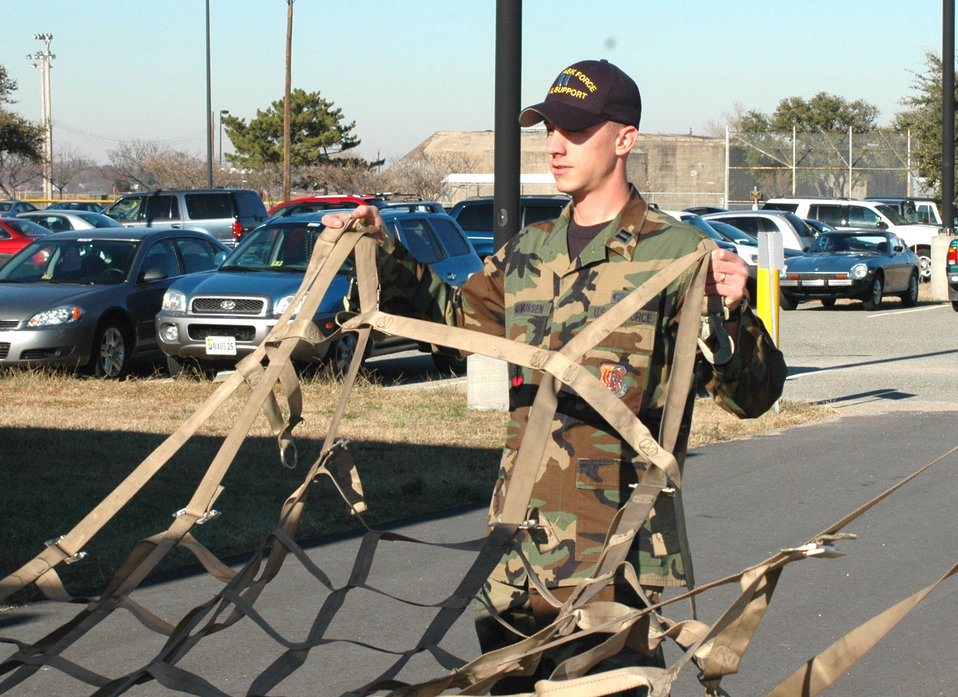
Serving through the season: Capt. Ryan Rasmussen

Capt. Ryan Rasmussen, an action officer for Joint Task Force Civil Support Communications directorate, helps palletize communications equipment during a deployment exercise at Fort Monroe, Va.